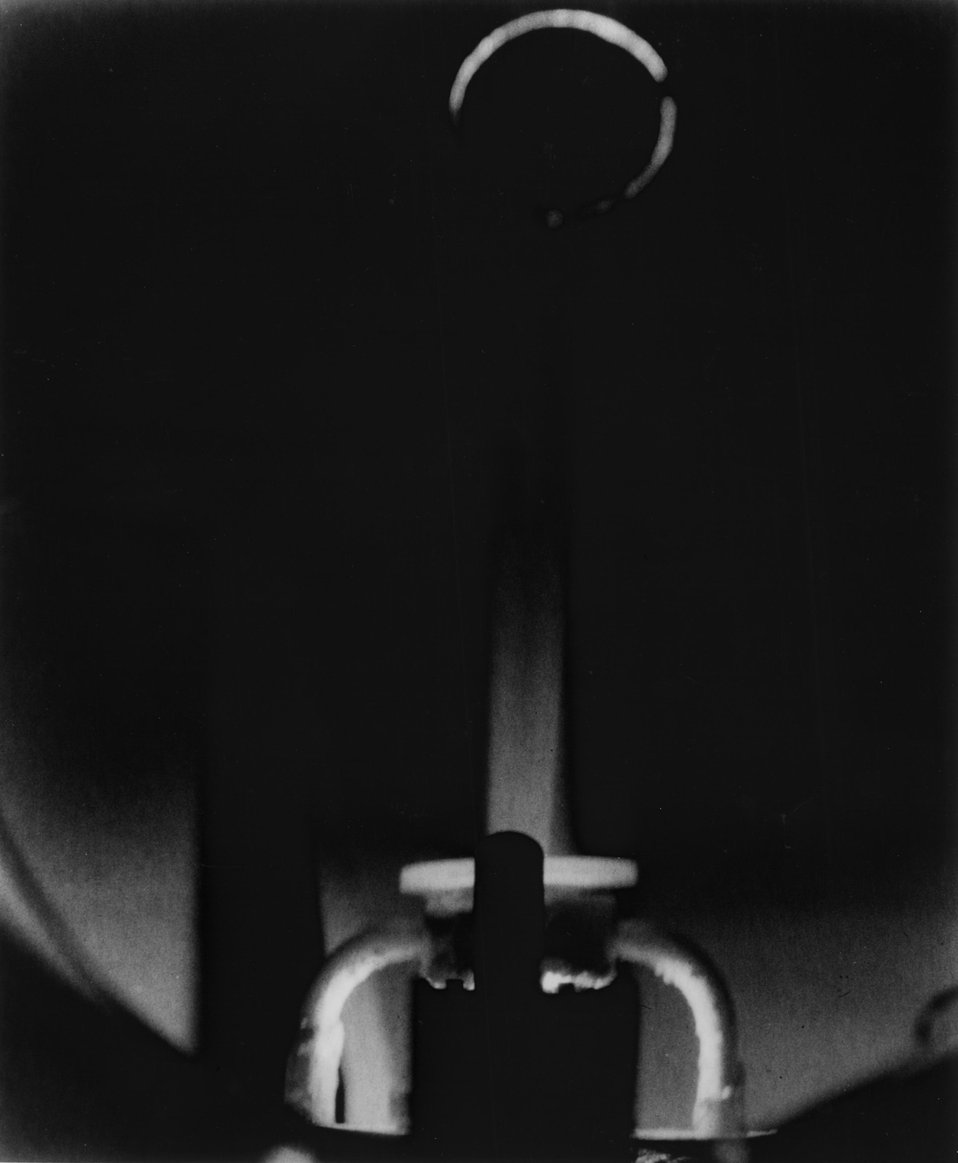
LITHIUM PLASMA...Ionized gases may be used as the propellant in future electrical propulsion motors for space application. c. 1970